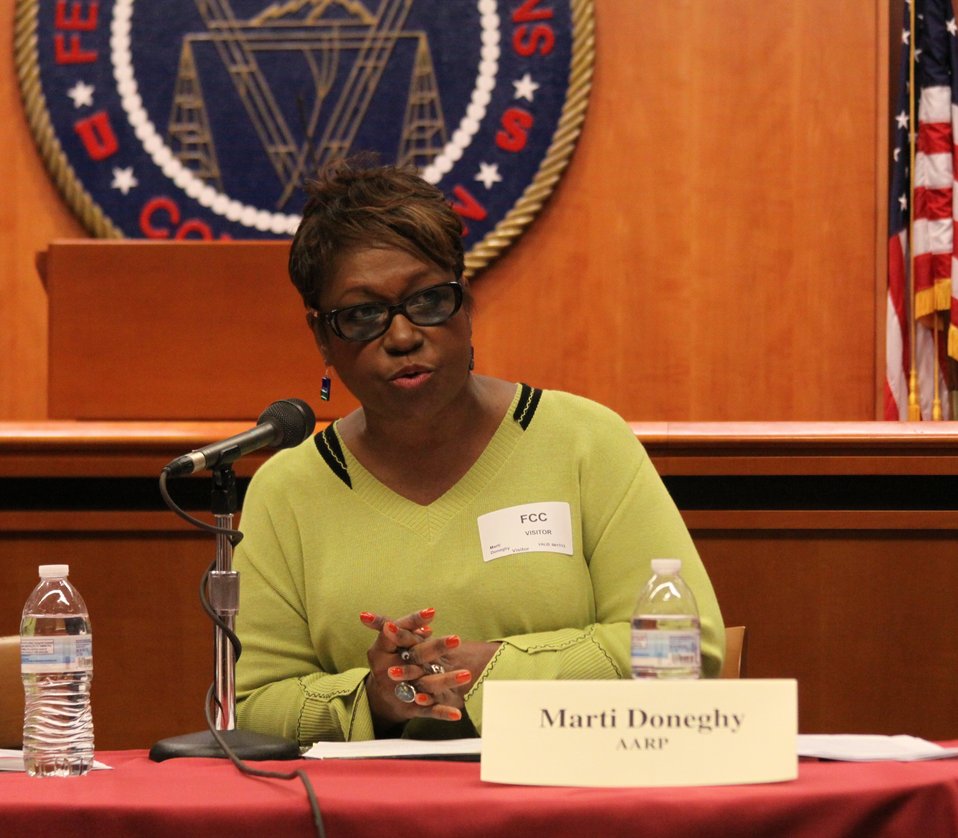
April 17, 2013 Bill Shock and Cramming Workshop